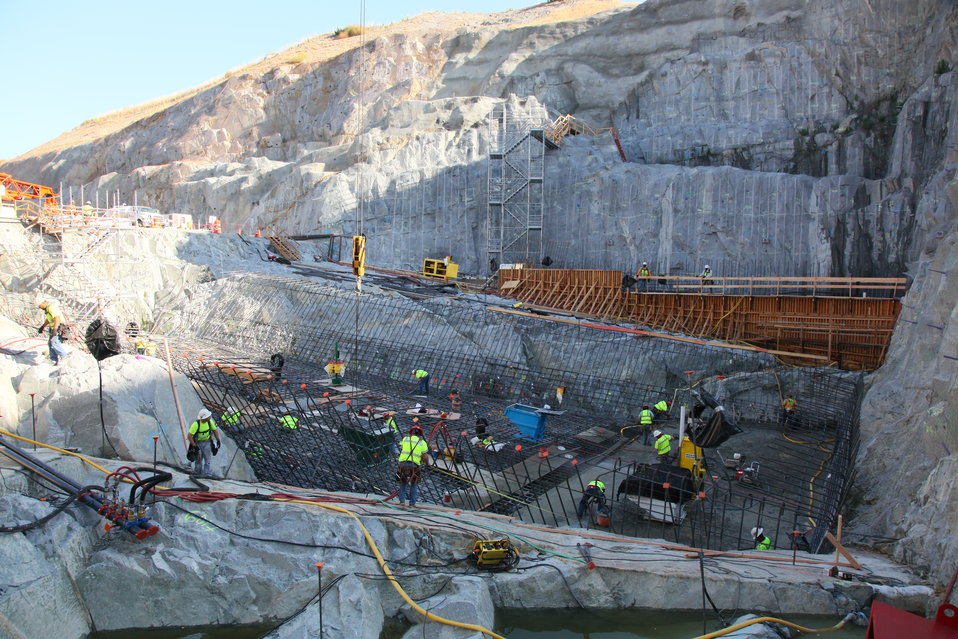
Rebar before concrete

Working in a maze of a steel rebar, contractors for the U.S. Army Corps of Engineers Sacramento District construct a support system for concrete placement for the auxiliary spillway at the Folsom Dam Joint Federal Project in Folsom, Calif., June 14, 2012. The Folsom Dam Joint Federal Project is a joint effort of the Corps, U. S. Bureau of Reclamation, the Central Valley Flood Protection Board and the Sacramento Area Flood Control Agency to improve the safety of the current dam and reduce flood risk for the greater Sacramento area.